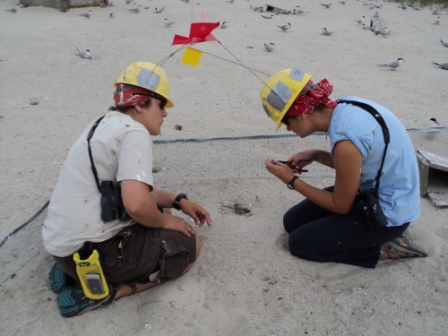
Bird banding

U.S. Fish and Wildlife Service